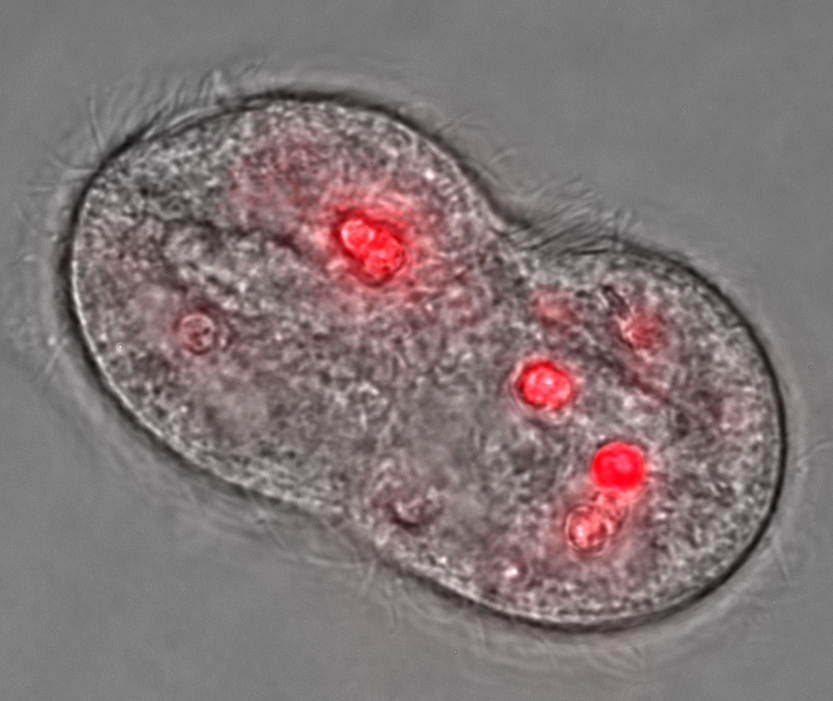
Nanodots Moving Up Model Food Chain

Photomicrograph of ciliate T. pyriformis during cell division with accumulated quantum dots appearing red.